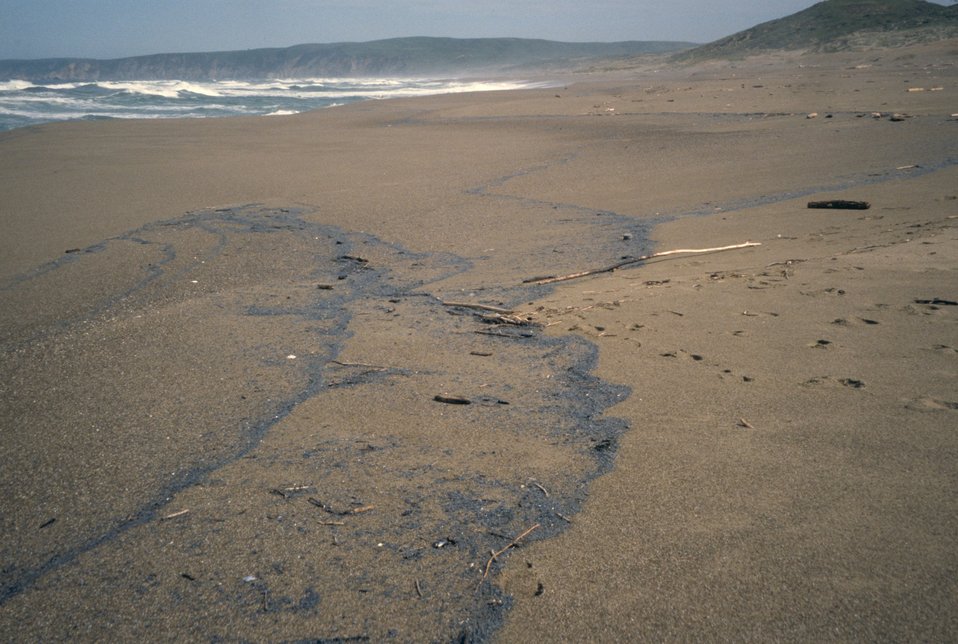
Point Reyes Great Beach. Possibly natural material washed up on beach. No reported oil spills in San Francisco area in 2006.